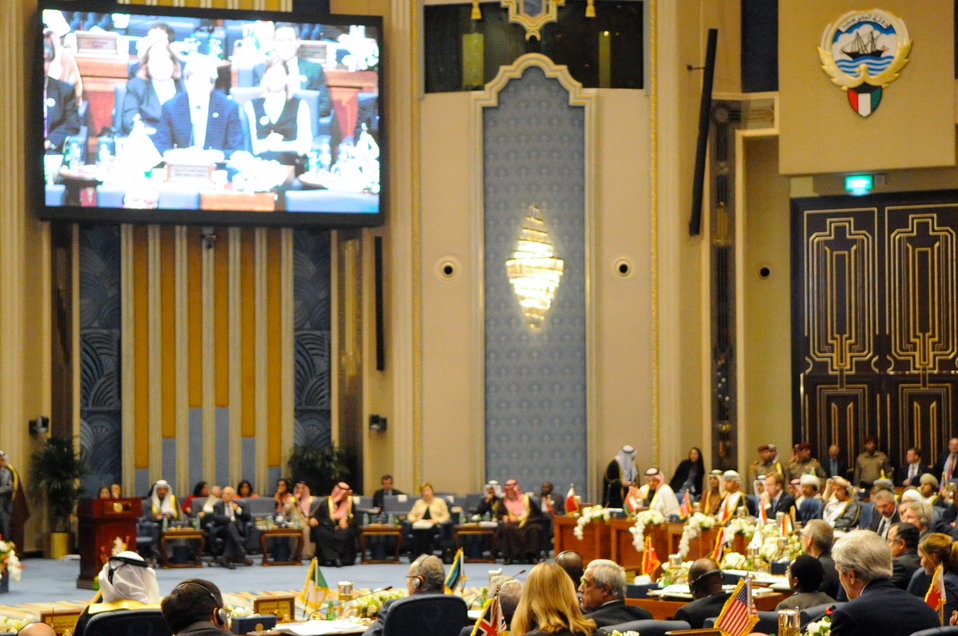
Secretary Kerry Addresses Syria Donors' Conference in Kuwait

U.S. Secretary of State John Kerry, bottom right, announces a $380 million pledge while addressing the Syria Donors' Conference in Kuwait City, Kuwait, on January 15, 2014.